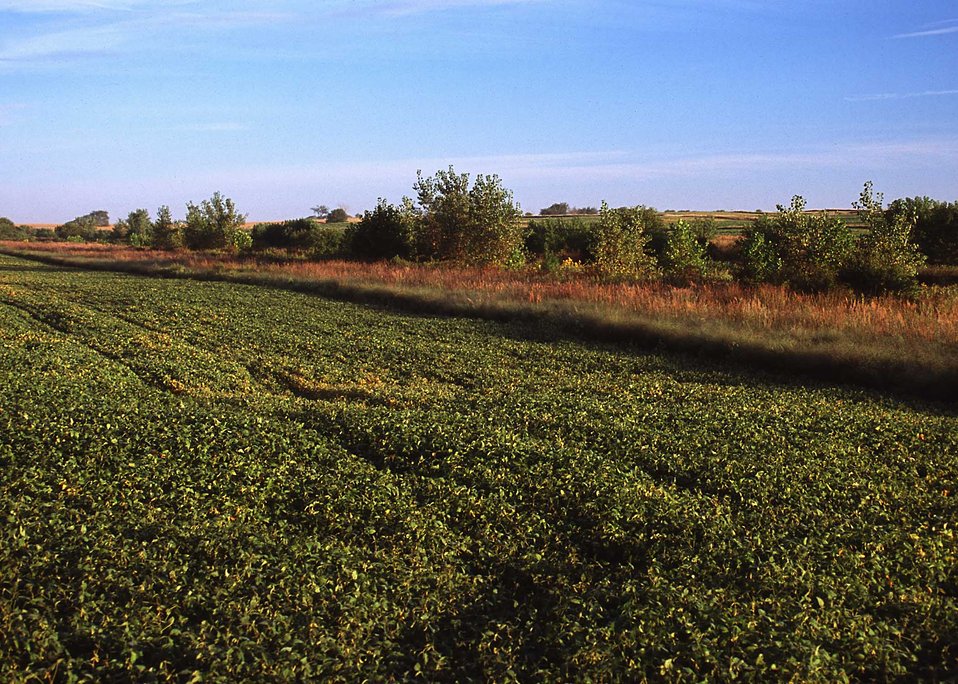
Riparian conservation buffer of grasses and trees offers wildlife habitat along Bear Creek in Story County, Iowa.